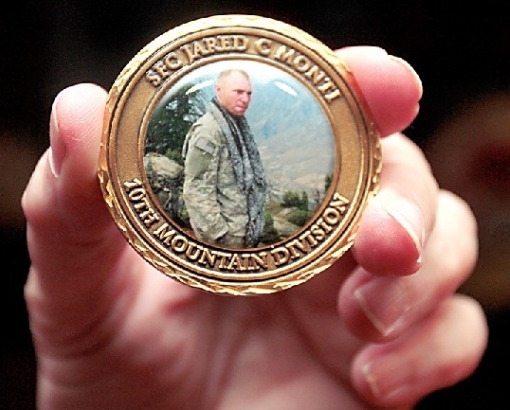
Taking Jared's flight

Army Staff Sgt. Jared Monti's likeness is displayed on a coin that was presented to Col. Patrick Doherty by Sergeant Monti's mother, Janet Monti. Sergeant Monti was killed in Afghanistan while attempting to save a wounded soldier. Colonel Doherty is the 4th Fighter Wing commander.